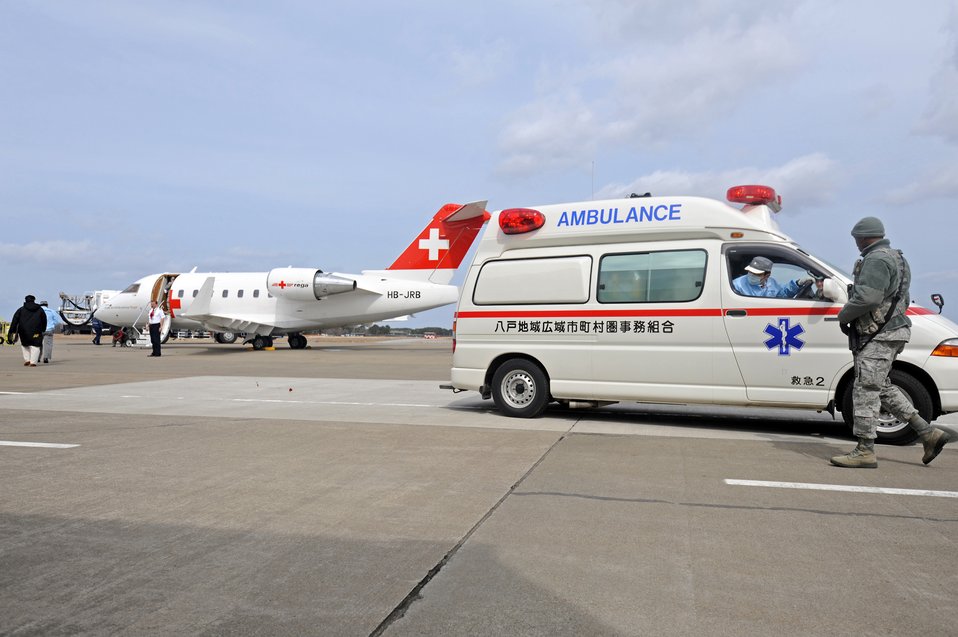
Transporting precious cargo worldwide

MISAWA AIR BASE, Japan -- The 35th Security forces escort a Hachinohe ambulance onto the base flightline Mar. 21 to allow the transport of Maurer Bruno, a volunteer Swiss Disaster Dog Association member, back to Switzerland. Bruno was helping out for ten days with the recovery efforts in northern Japan prior to his emergency surgery at the Hachinohe Medical Center.